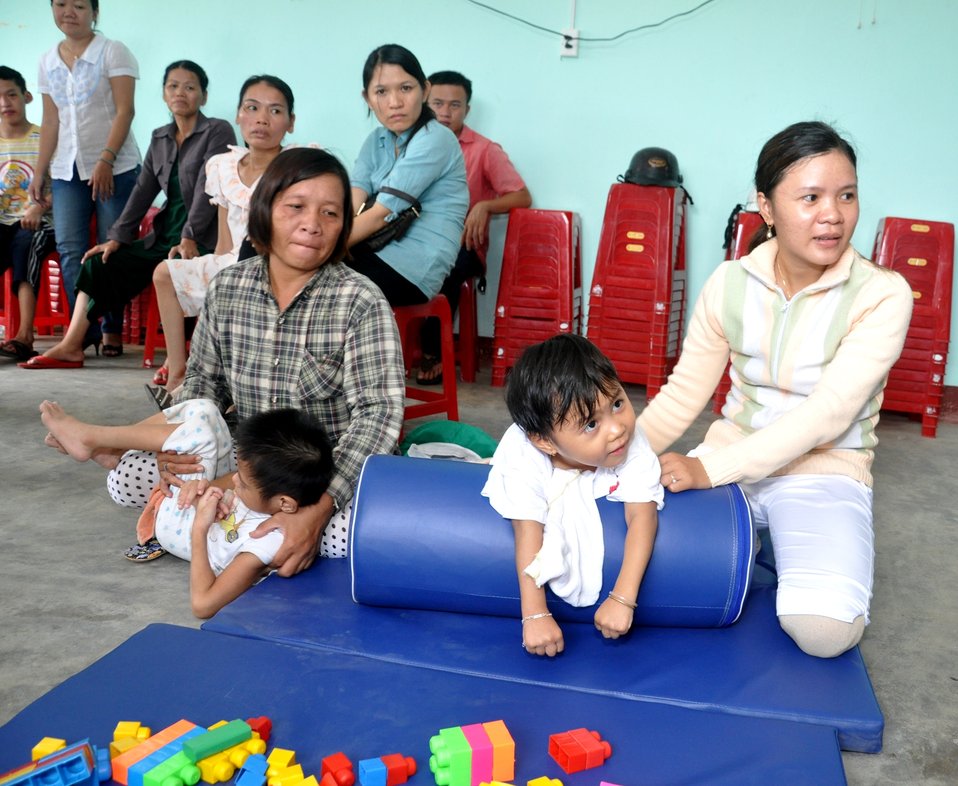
USAID supports a community rehabilitation unit in Danang.

Danang, June 10, 2013.